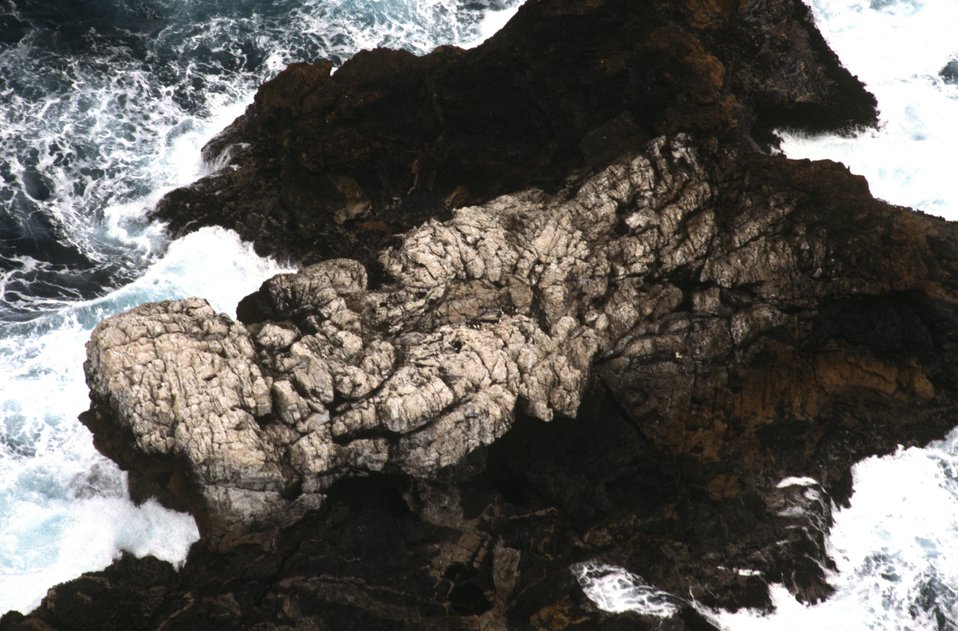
Castle Rocks